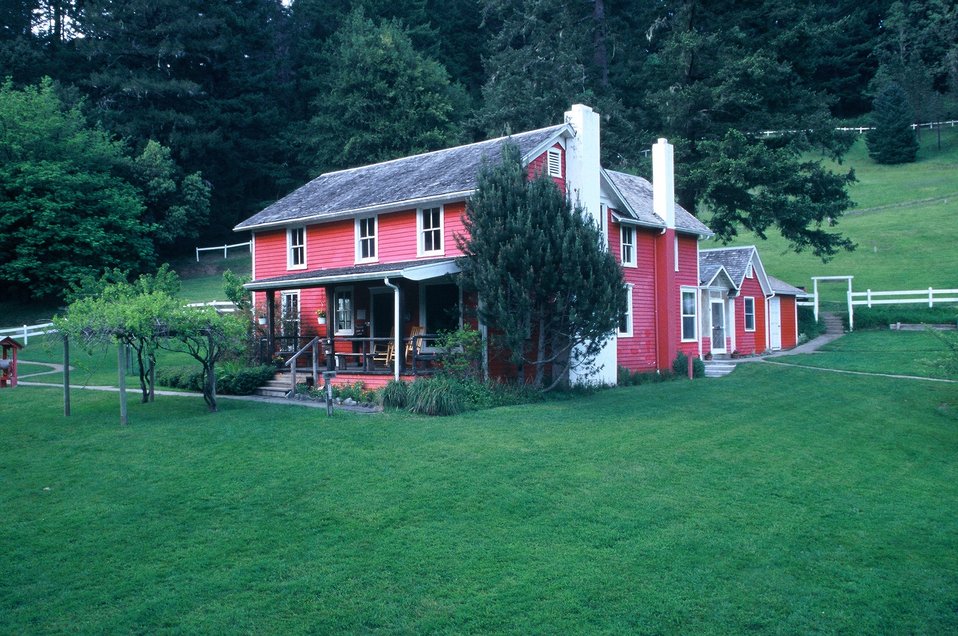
Wild section of the Rogue River from Grave Creek to Foster Bar May 19 to May 22.